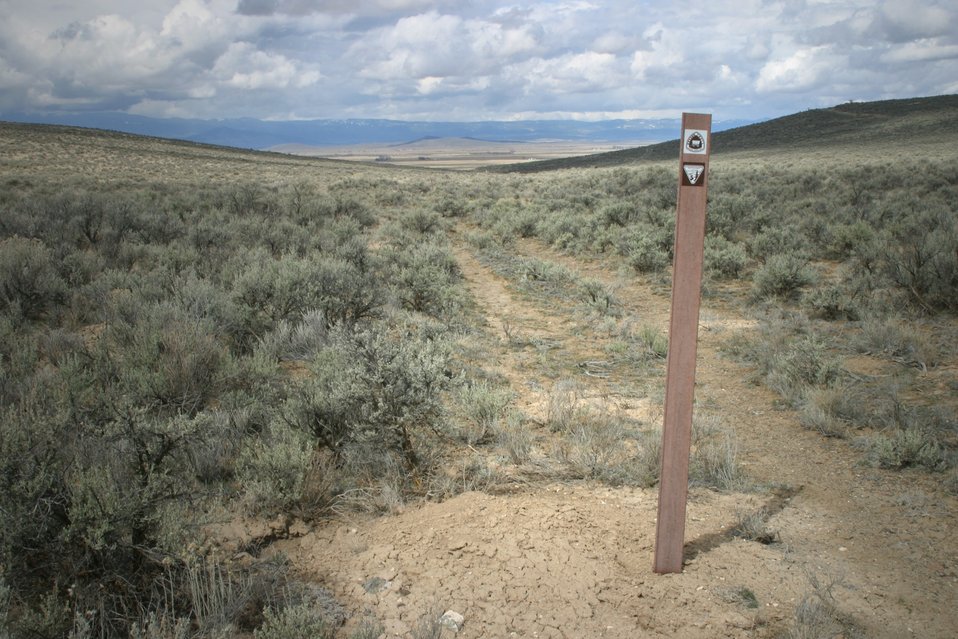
Oregon Trail ruts below the National Historic Oregon Trail Interpretive Center.